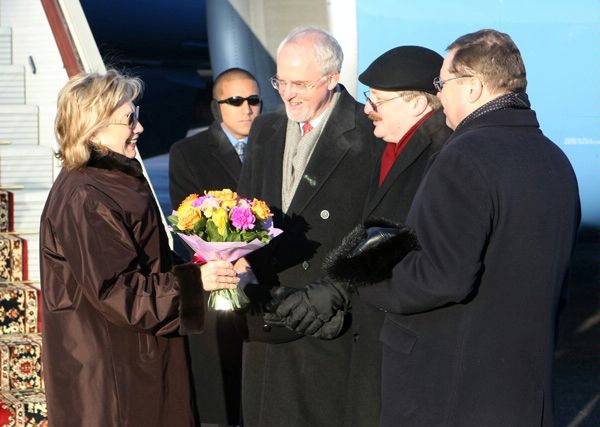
Secretary Clinton Arrives in Moscow

U.S. Secretary of State Hillary Rodham Clinton greets U.S. Ambassador to Russia John Beyrle, Director North American Department, Russian Ministry of Foreign Affairs Alexander Darchiev, and Deputy Director, State Protocol, Ministry of Foreign Affairs, Andrey Yakovlev in Moscow, Russia March 18, 2010.